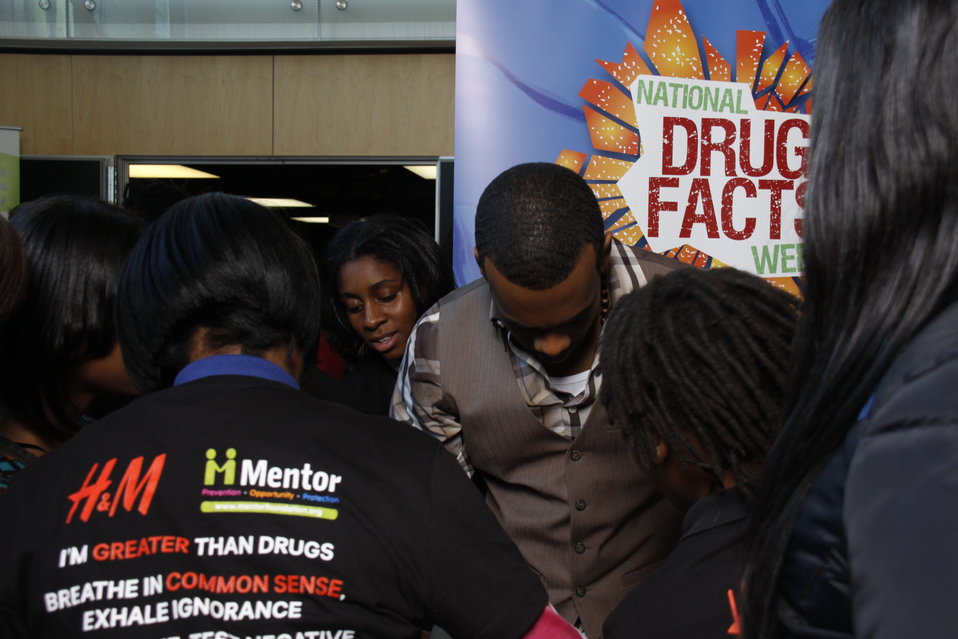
NDFW Mentor Event